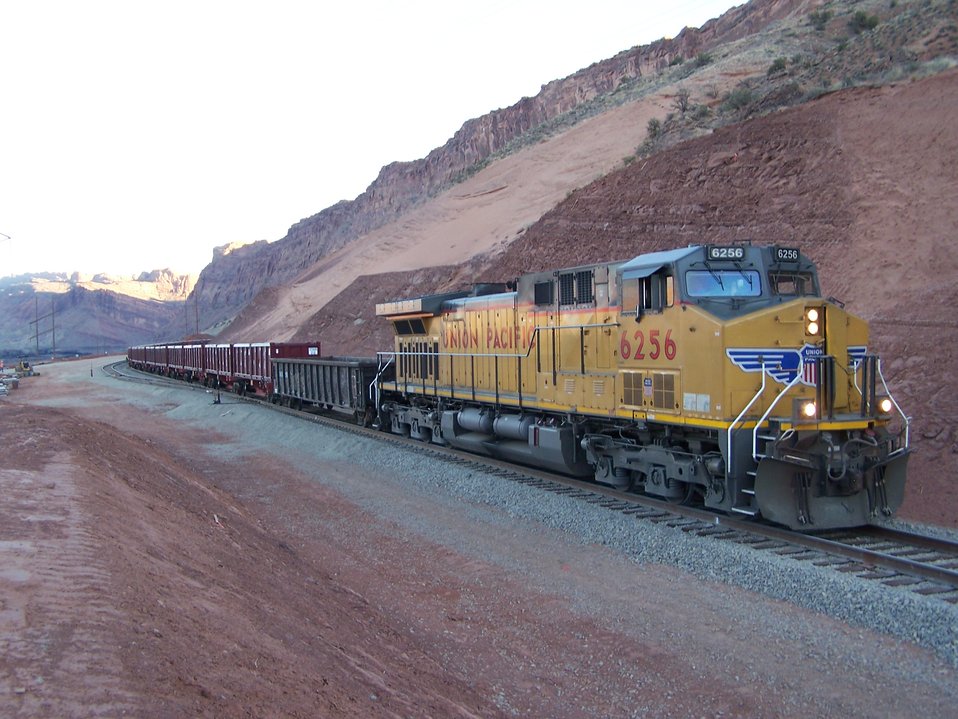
Moab Train

A mill tailings train.